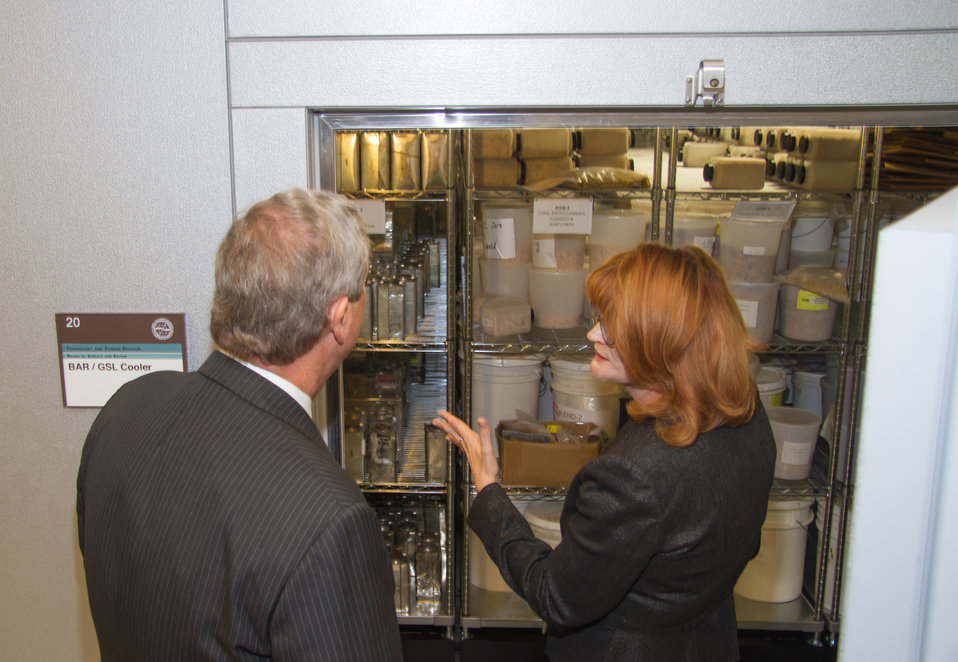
Mary Alonzo, Director of Grain Inspection, Packers and Stockyards Administration (GIPSA), Technology and Science Division, shows Agriculture Secretary Tom Vilsak one of the large refrigerated storage areas within GIPSA's National Grain Center. The long-term, but readily accessible storage of many types of grain representing market quality conditions is crucial to GIPSA's training of official inspection personnel in Kansas City, MO, on Wednesday, Oct. 23, 2013.